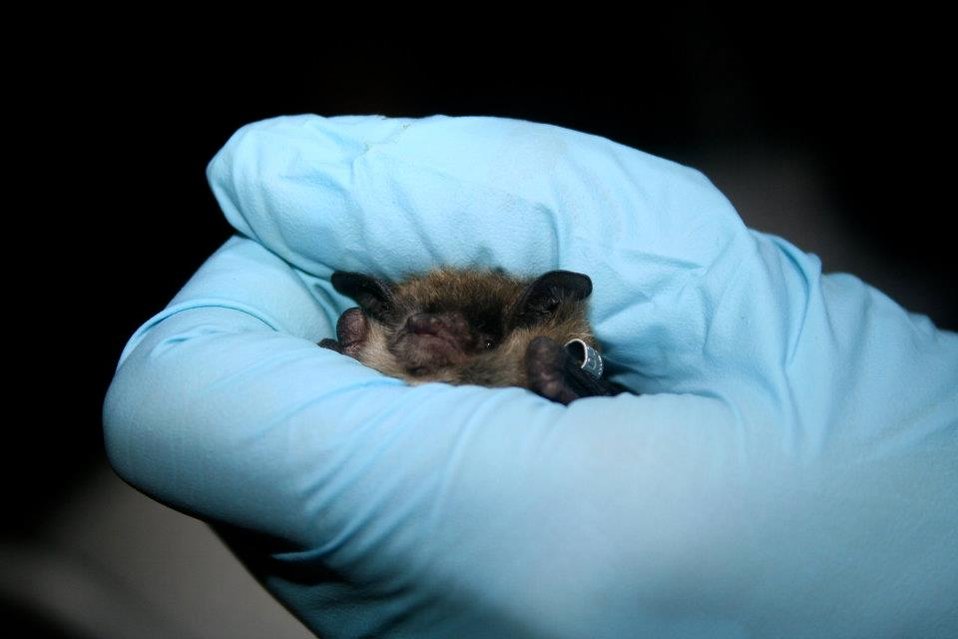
Researcher holds little brown bat (Myotis lucifugus)